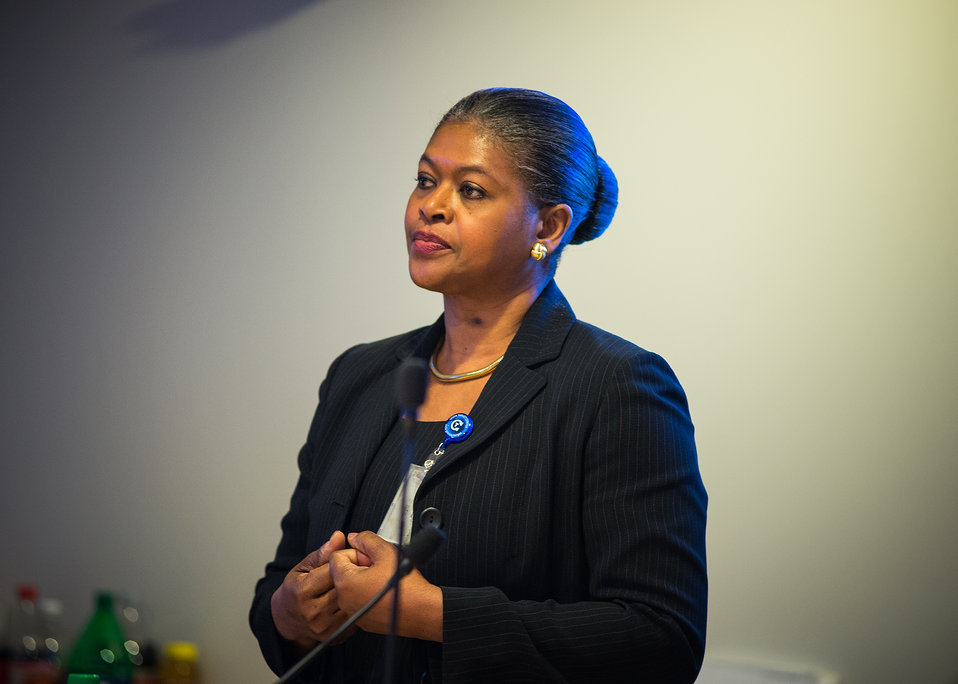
Yvonne Jackson, Associate Chief Information Officer offered closing remarks at the U.S. Department of Agriculture (USDA), IT Job Shadow Day where students from the Thomas Jefferson High School of Science and Technology, Alexandria, VA were offered discussions with IT professionals and agricultural specialists from a variety of mission areas at USDA in Washington, D.C. Tuesday, Mar. 25, 2014.